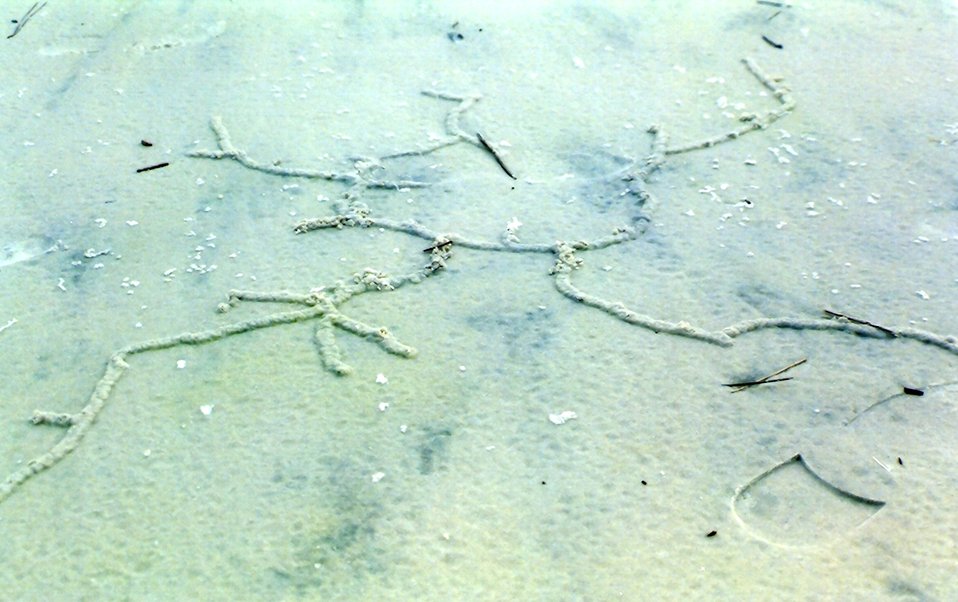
Pencil-sized tunnels caused by some type of burrowing animal caused a series of hieroglyphic appearing designs on the beach.